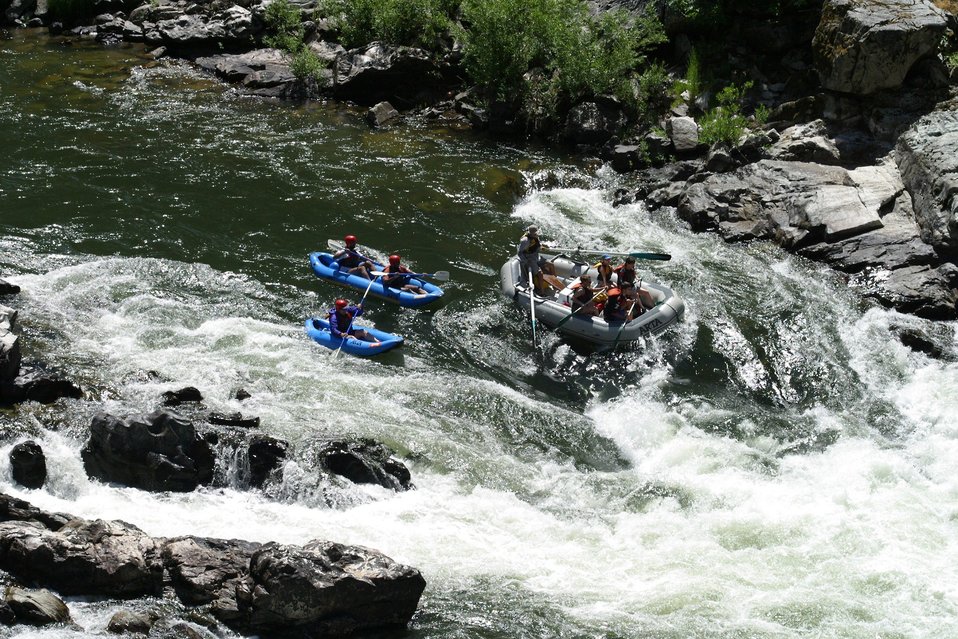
Boater at Grave Creek Falls